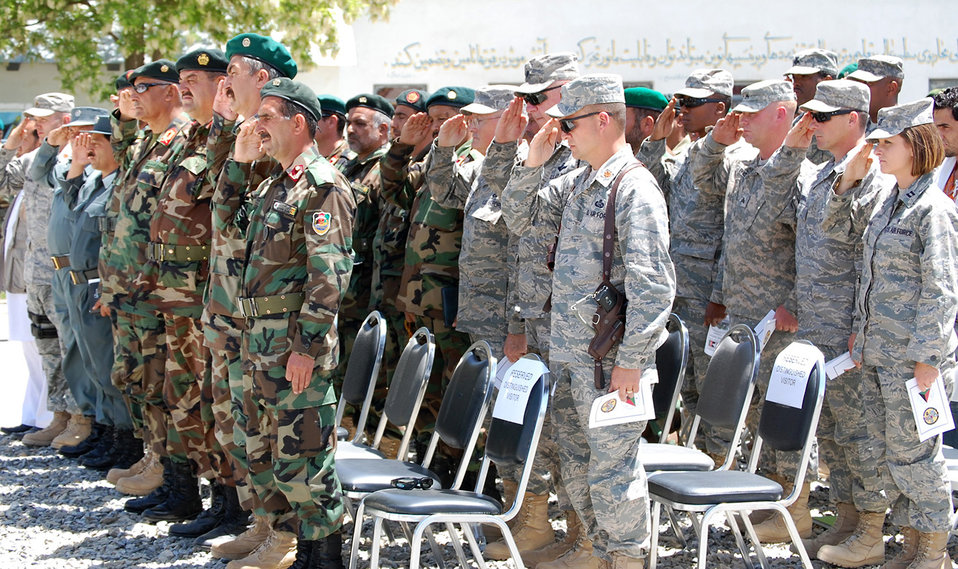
Monument dedication culminates effort of embedded American advisors

Airmen, Soldiers and Sailors embedded with the 5th Kandak (Battalion) as training advisors salute alongside their Afghan counterparts during a monument dedication May 14 outside Kabul, Afghanistan. More than 250 U.S. servicemembers and Afghan security forces celebrated seven years of military cooperation, including 18 Airmen who have provided combat support and counter-insurgency training to more than 430 Afghan soldiers within the Afghan National Army in the last year.